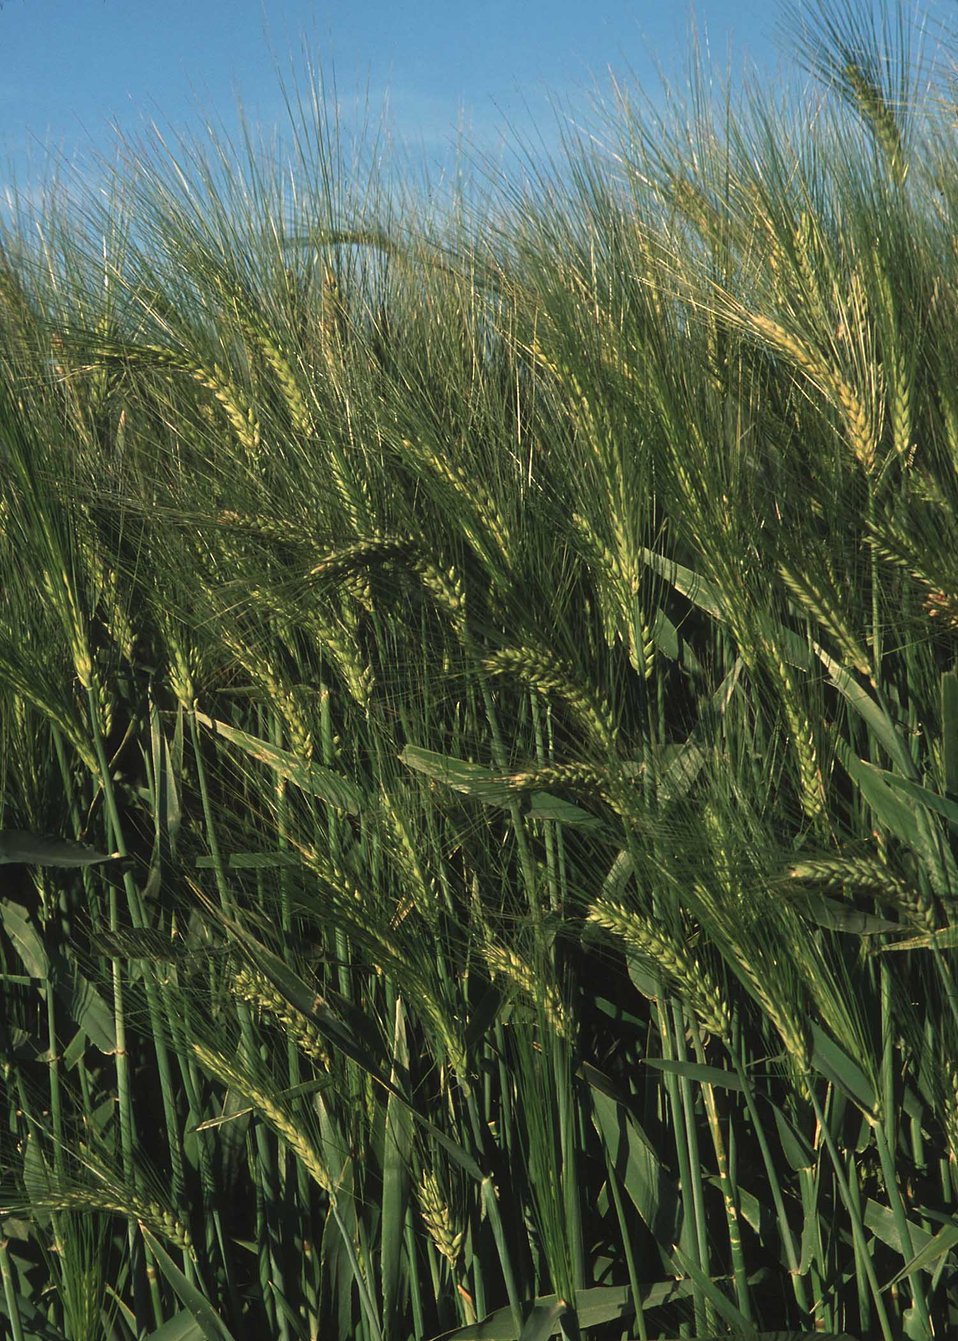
Wheat in the field. Yuma, Az.